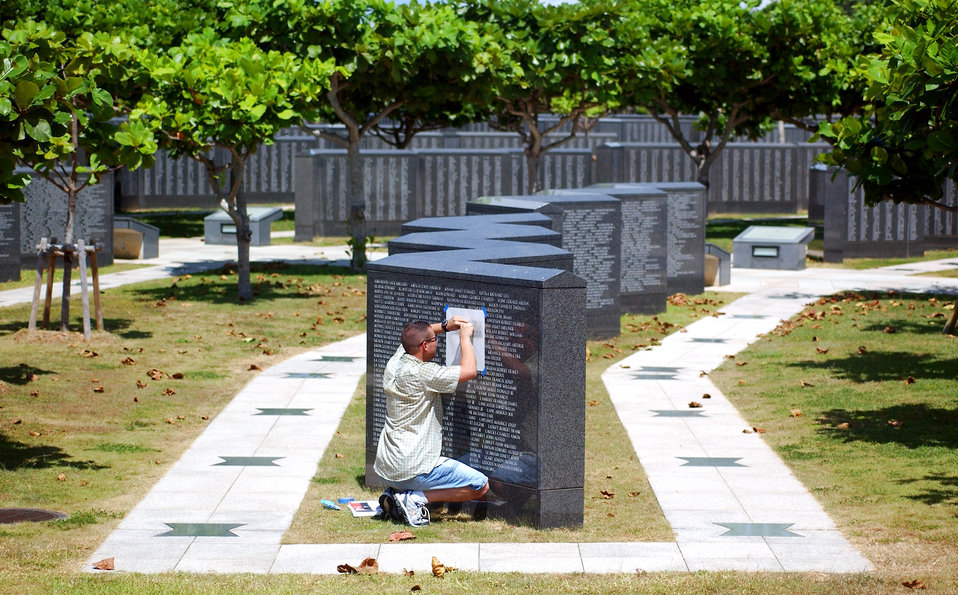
The Battle of Okinawa memorial

Tech. Sgt. Victor Follis does a pencil rubbing July 15 of the name of a servicemember who died in the Battle of Okinawa. Sergeant Follis does the rubbings to help family members to remain connected to their loved ones who died in the battle more than 60 years ago. The memorial is located in Peace Prayer Park in Itoman City, Japan. Sergeant Follis is with the 18th Maintenance Group at Kadena Air Base, Japan.